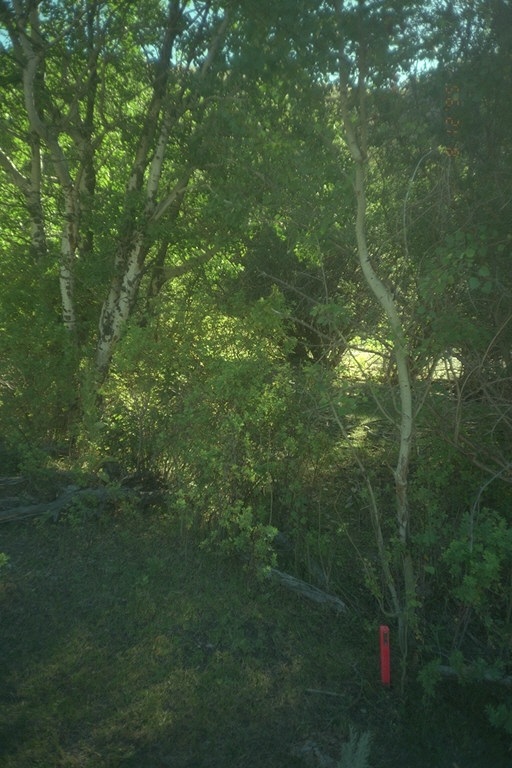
Riparian area Public Lands Salmon Field Office UCSC Upper Columbia Salmon Clearwater District